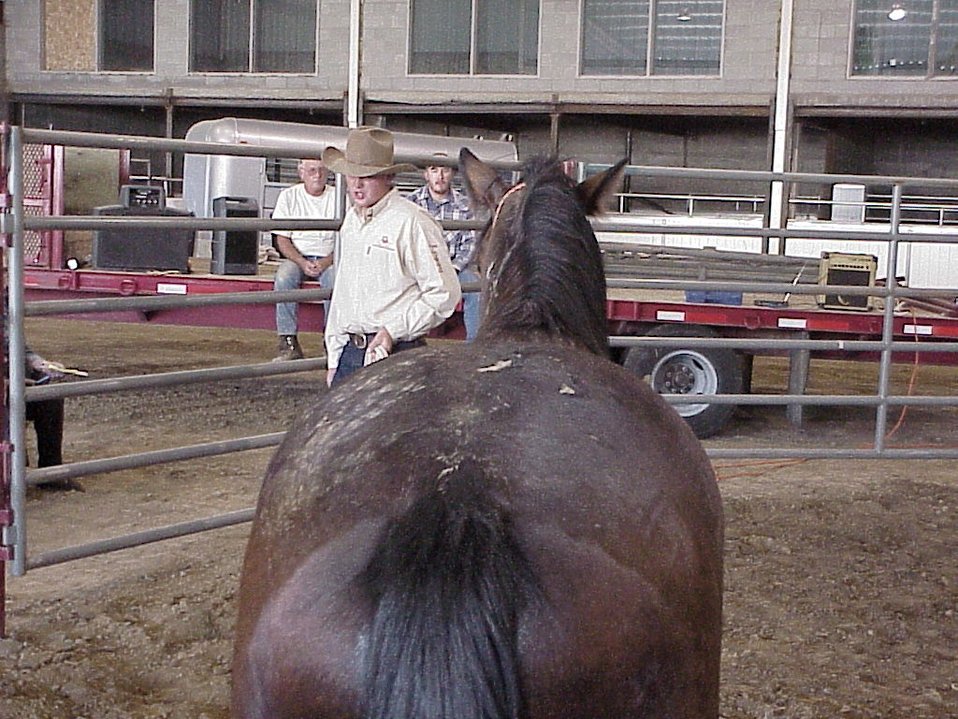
Horse Gentler Mario Johnson Lewiston Wild Horse and Burro Adoption Program Auction WHB indoor auction Cottonwood Field Office UCSC Upper Columbia Salmon Clearwater District